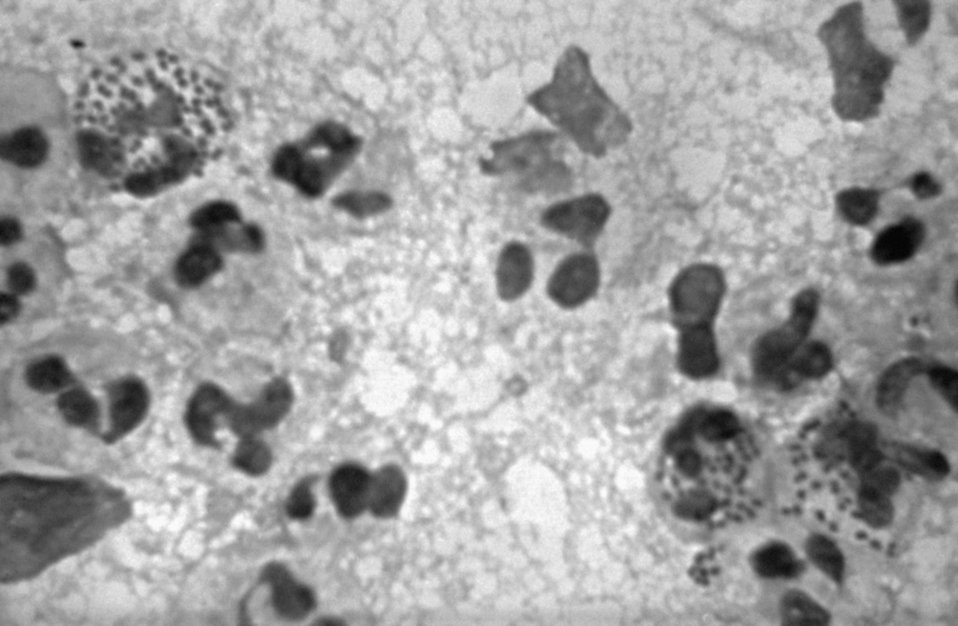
A photomicrograph of intracellular Neisseria gonorrhoeae bacteria.